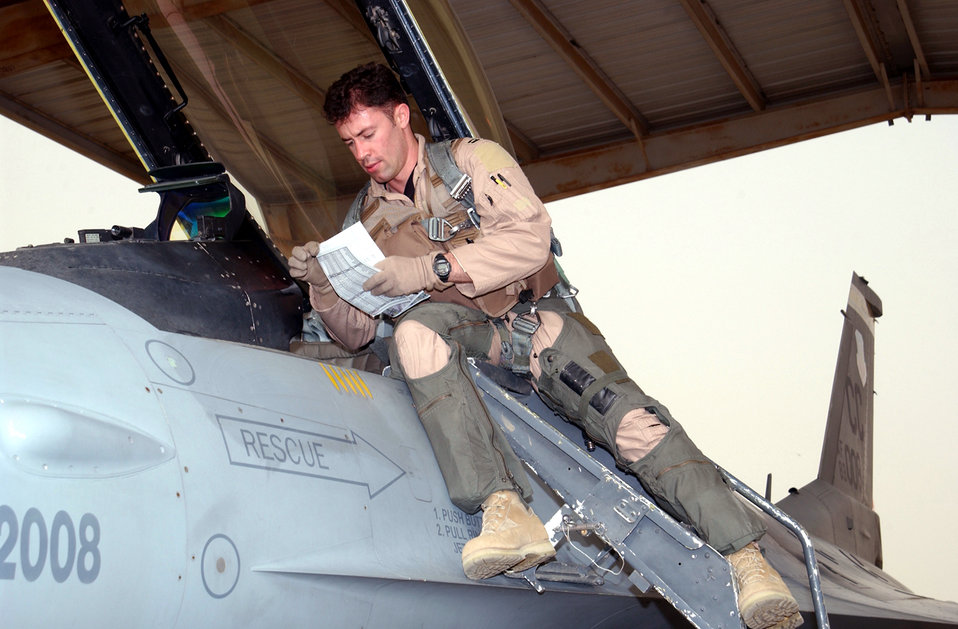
Quatacker

OPERATION IRAQI FREEDOM -- Capt. Jeremy